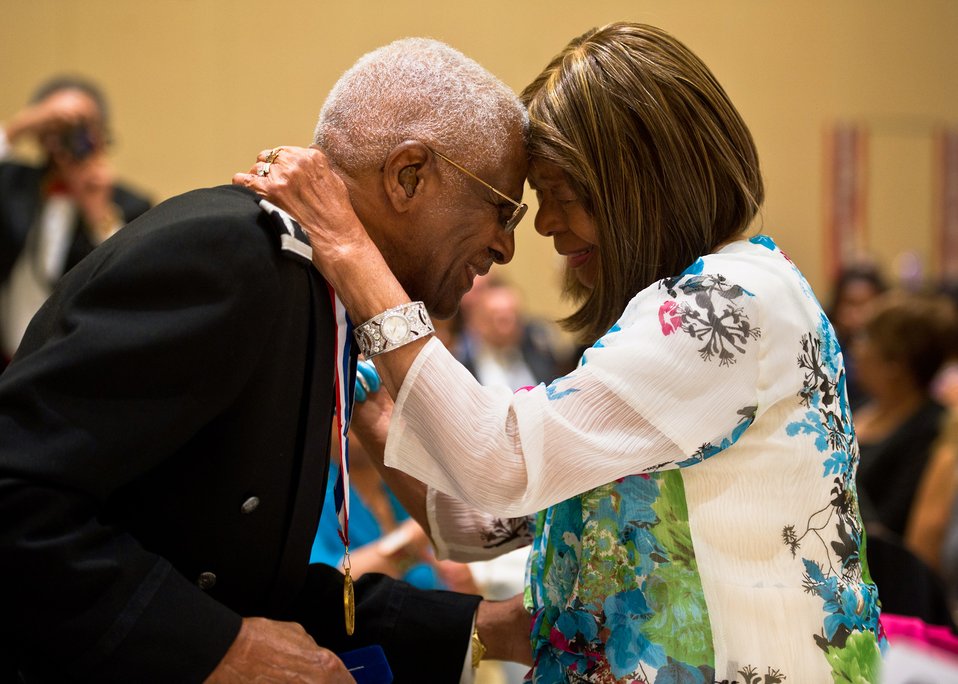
A Tuskegee Honor

Pearlie Harvey congratulates her husband, Ret. Lt. Col. James Harvey, at the Gala Dinner for the Tuskegee Airmen 40th National Convention, Aug. 6, 2011, at the Gaylord National Hotel, Md. Colonel Harvey received the Noel F. Parrish Award, which is the highest honor awarded by Tuskegee Airmen Inc. The award recognizes outstanding endeavors to enhance access to knowledge, skills, and opportunities.